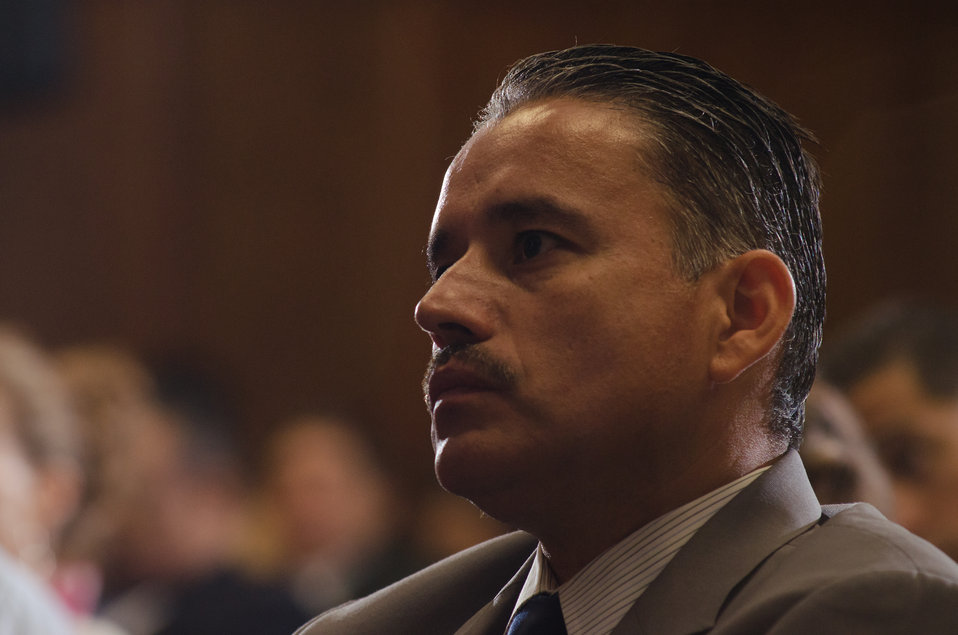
U.S. Department of Agriculture (USDA) Office of the Secretary Deputy Chief of Staff Oscar Gonzales, Jr. made remarks on behalf of Secretary Thomas J. Vilsack, during the 2013 National Hispanic Heritage Month ”Hispanics: Serving and Leading our Nation with Pride and Honor,” on Thursday, Sept. 19, 2013, in the Jefferson Auditorium, USDA Headquarters, Washington, D.C.